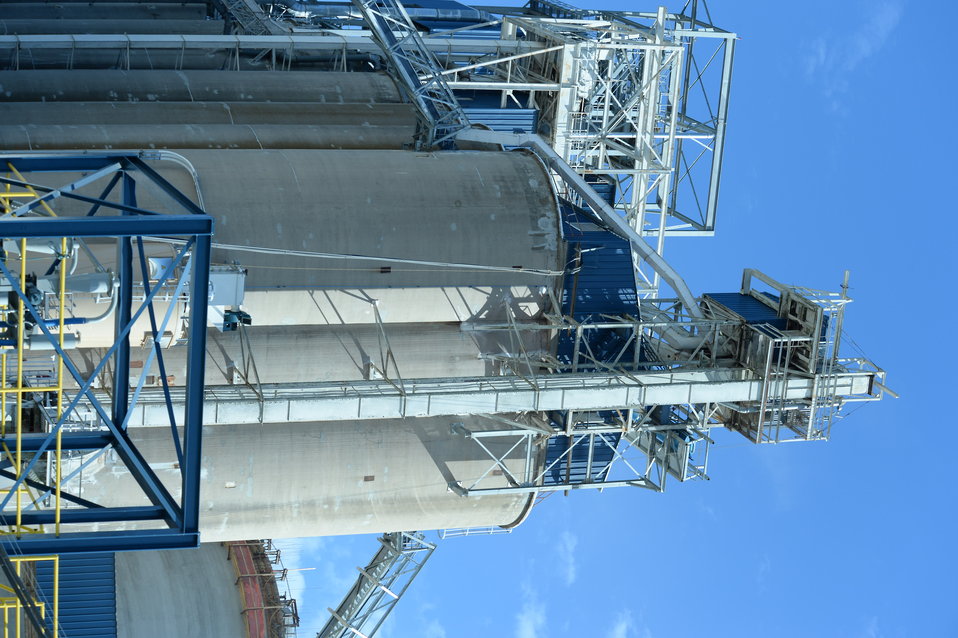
Grain is transferred from barges to holding tanks and tested in preparation for export near the port of New Orleans, LA on Tuesday, Nov. 19, 2013.